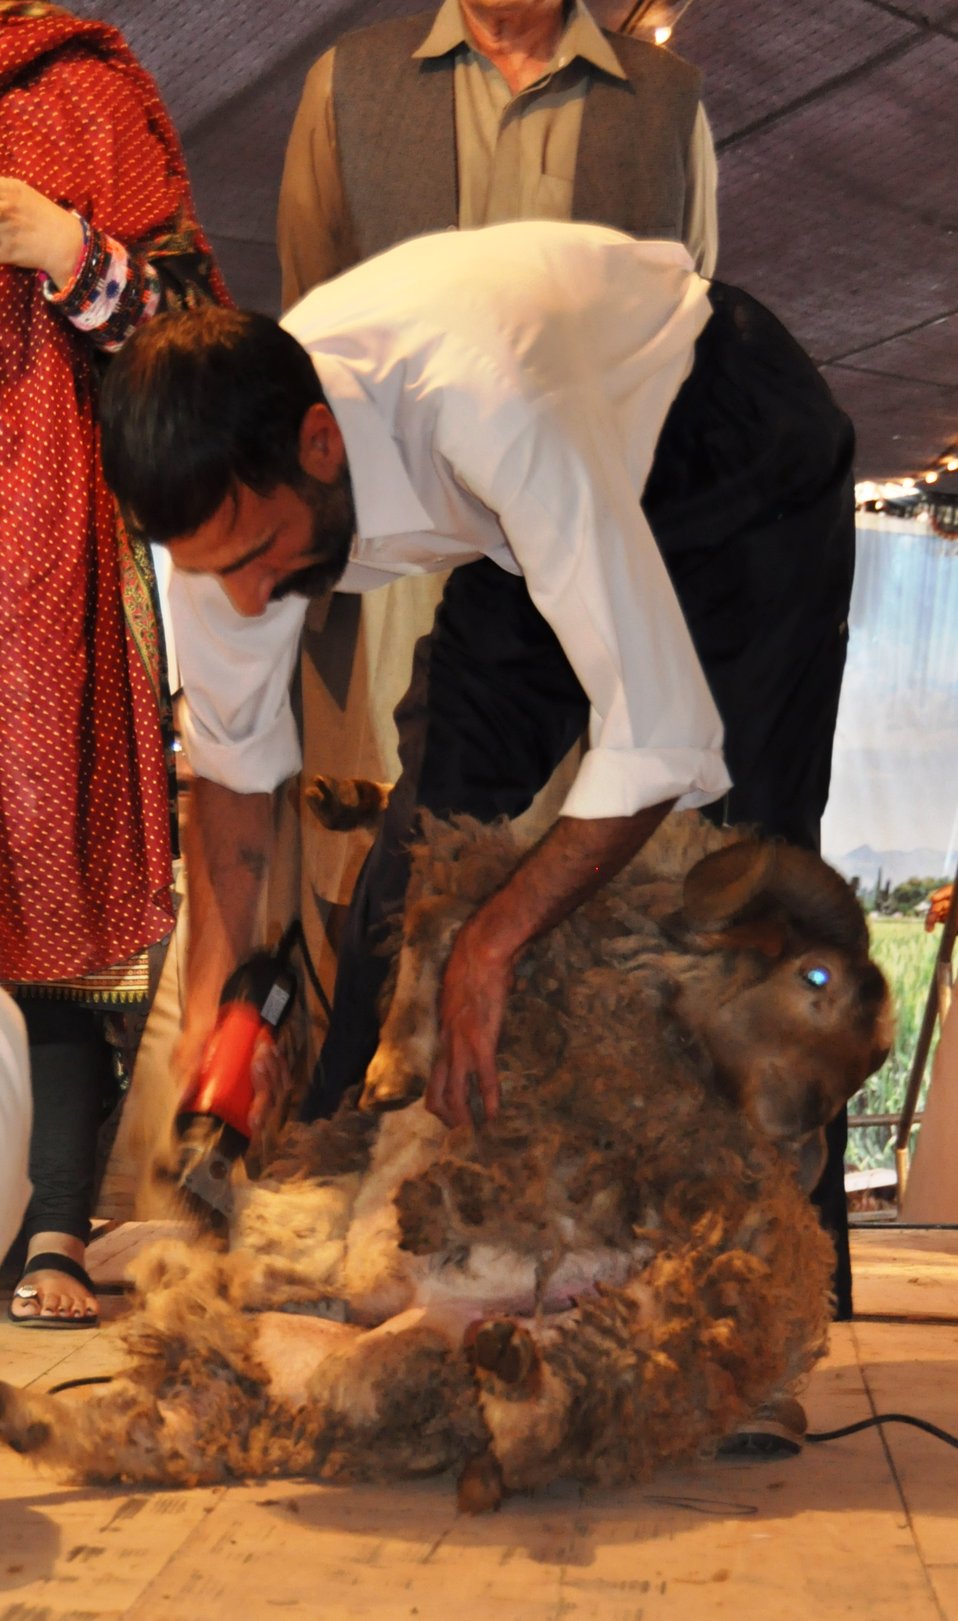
Shearing with machine